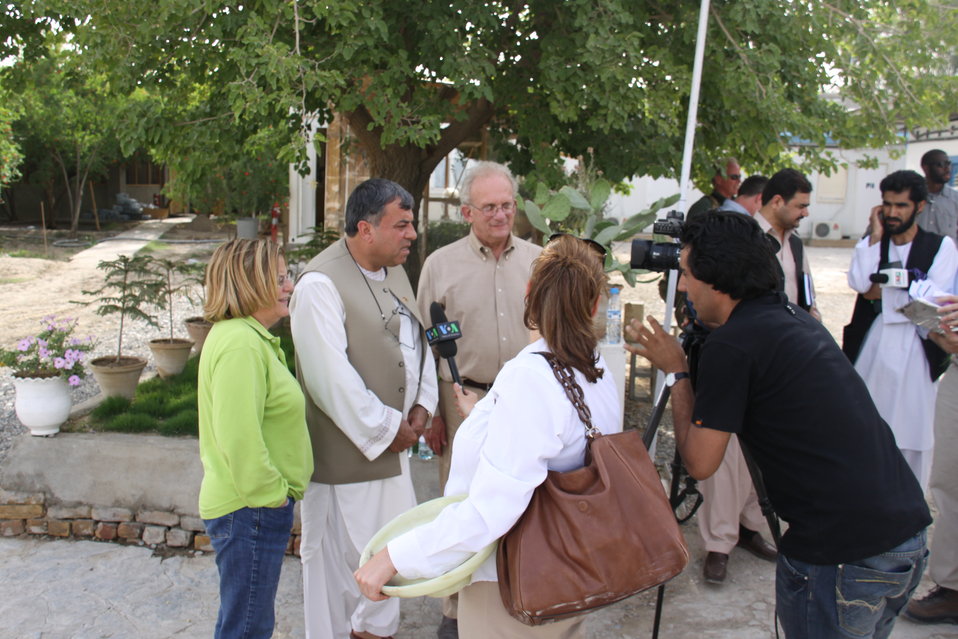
Meeting with Local Leaders in Kandahar